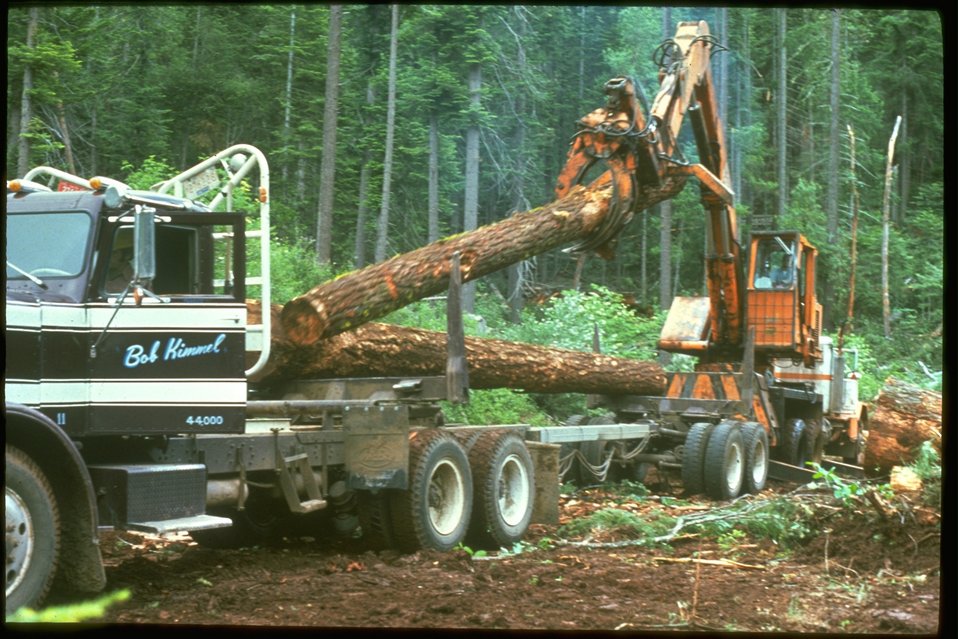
Loading log truck.